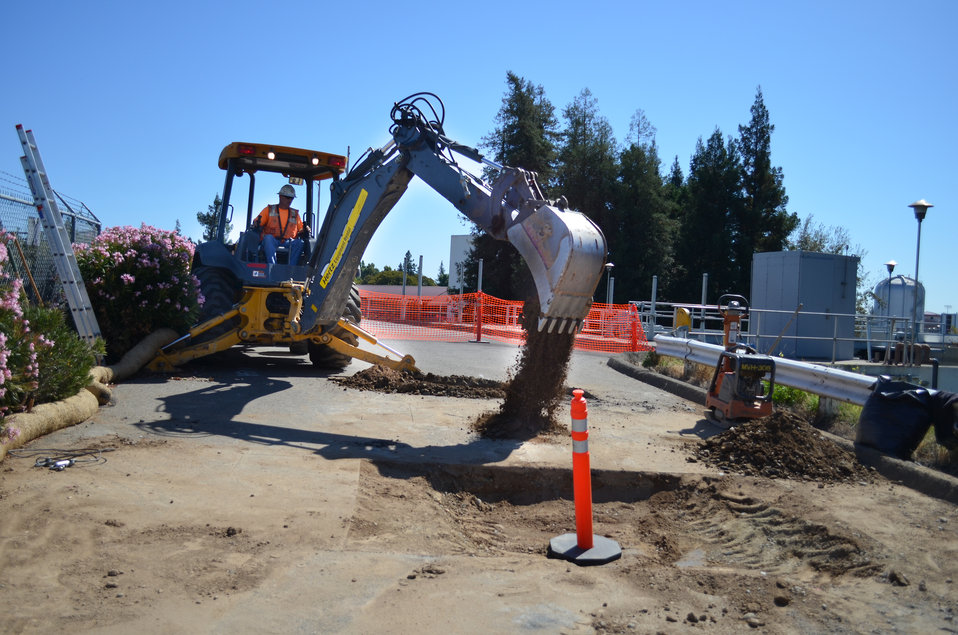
Preparing for levee work near the Fairbairn Water Treatment Plant

Crews for the U.S. Army Corps of Engineers Sacramento District are preparing for levee work this fall along the American River near the Fairbairn Water Treatment Plant in Sacramento, Calif., shown Oct. 3, 2013. The Corps built more than 20 miles of seepage cutoff walls into American River levees between 2000 and 2002, but work was set aside for later where complicated encroachments existed such as utilities, power lines and bridges.